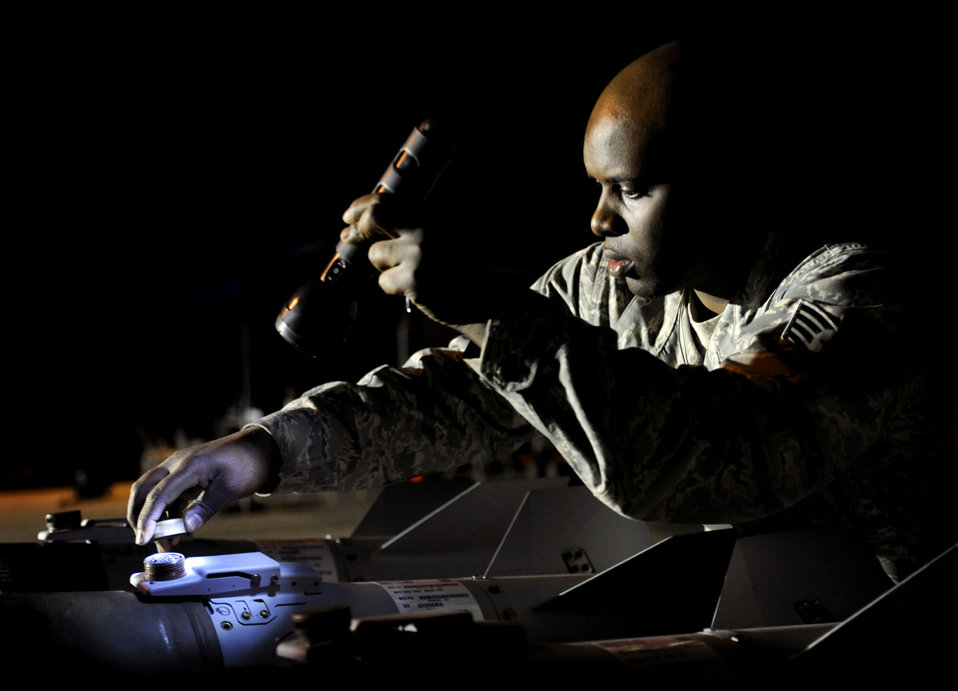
Osan Airmen host munitions exercise

Staff Sgt. Brian Harp checks GBU12 munitions for technical accuracy in the in-check area of the bomb dump during the Combat Ammunitions Production Exercise May 25, 2010, at Osan Air Base, South Korea. Sergeant Harp is a munitions maintainer from the 35th Munitions Squadron at Misawa Air Base, Japan. CAPEX is a non-rated exercise held once a year in the Pacific Air Forces region. It provides training on non-nuclear reserve munitions production in integrated tasks orders and planning.